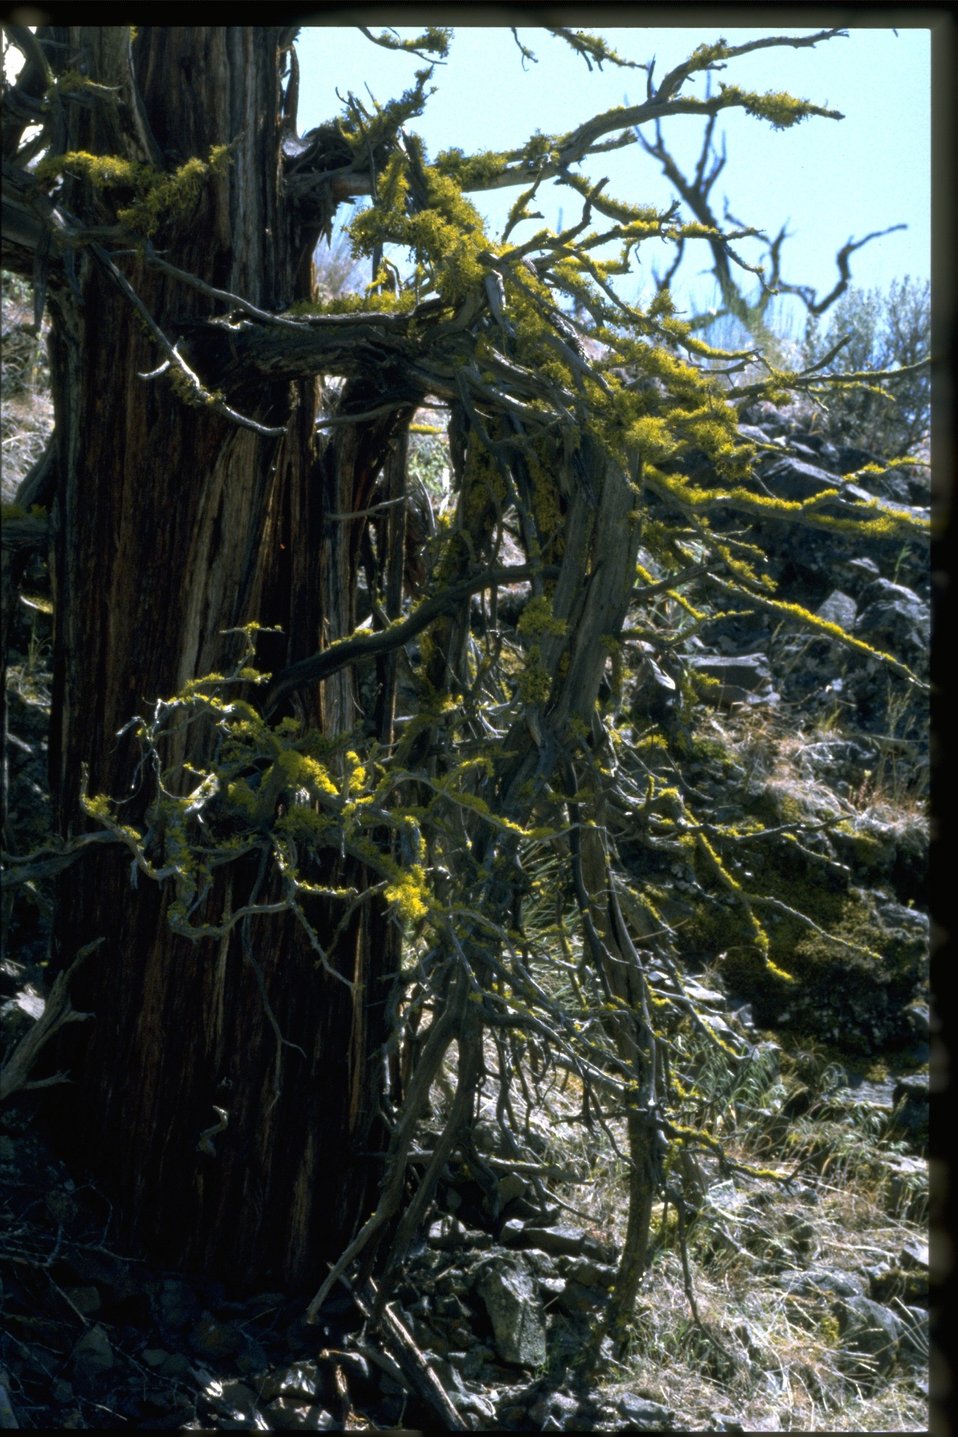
Ancient Western juniper (Juniperus occidentalis) with yellow-green lichen (Letharia vulpina).